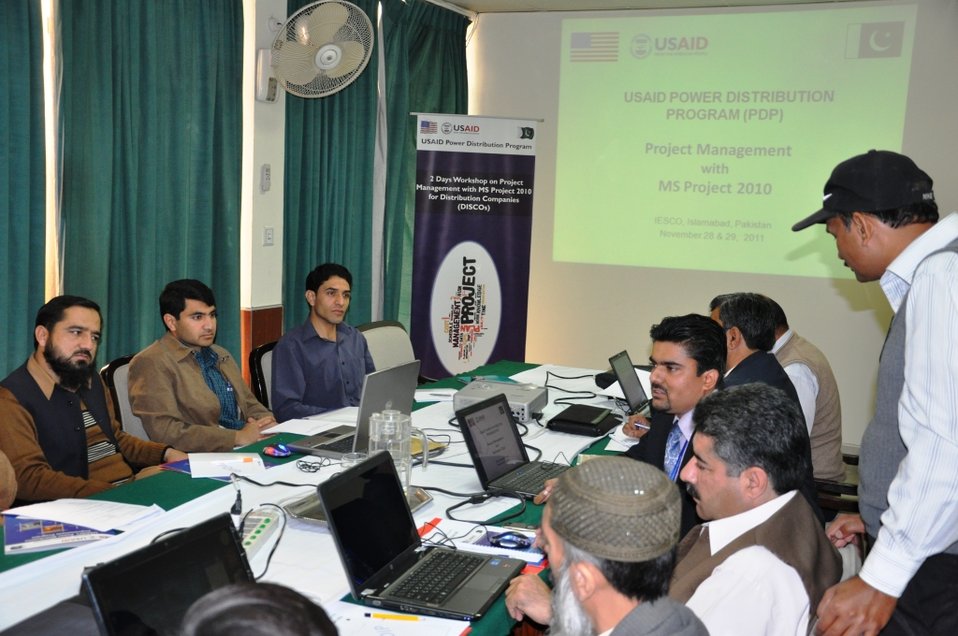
Project Management training at IESCO

Islamabad, November 28, 2011 - A 2-day workshop on 'Project Management with MS Project-2010' was organized at the IESCO HQ for the DISCO's project directors, managers and engineers enabling them to understand the best practices in the field of Project Management. The prime focus was on the application of MS Project 2010, after which the participants can plan, manage and control their ongoing and upcoming projects in a more efficient manner.